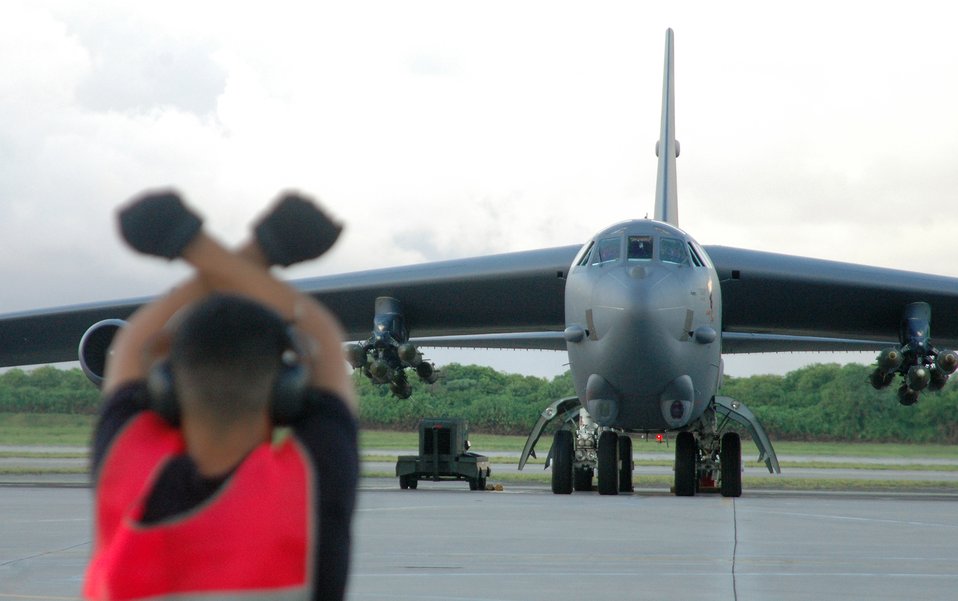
B-52 launch

OPERATION ENDURING FREEDOM (AFPN) -- Senior Airman Adam Mirabal launches a B-52 Stratofortress Jan. 26. The B-52s join other U.S. and coalition aircraft over Afghanistan, providing close-air support in support of Operation Enduring Freedom.